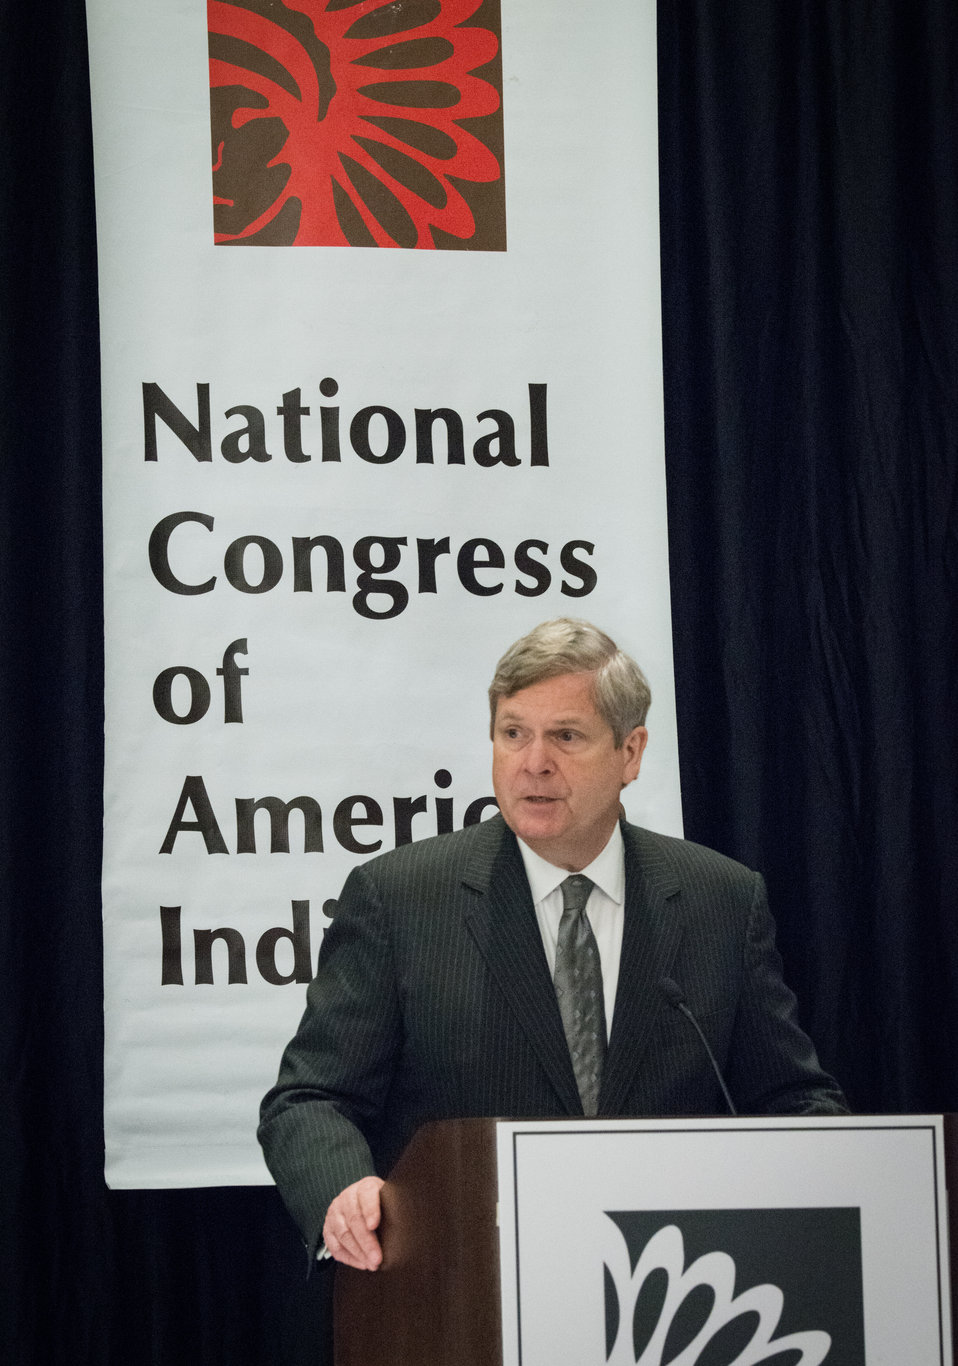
Agriculture Secretary Tom Vilsack addresses the 2014 National Congress of American Indians (NCAI) Executive Council Winter Session at the Westin Washington City Center in Washington, D.C. on Thursday, Mar. 13, 2014.